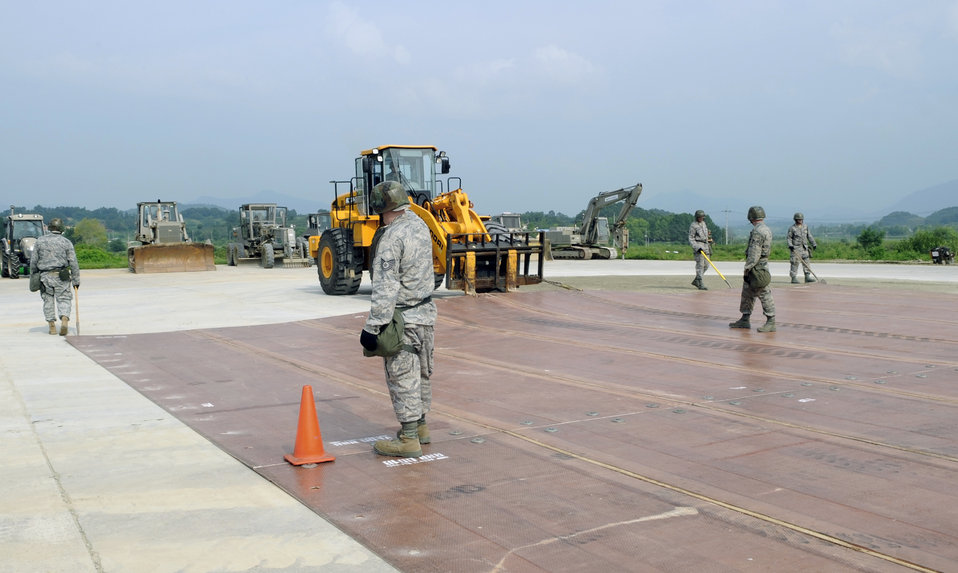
Osan AB's airfield damage repair team train with South Korean air force

Airmen from the 51st Civil Engineer Squadron stand on a folded fiberglass mat as it is moved into place by a 10,000-pound forklift on a simulated runway at Jungwon Air Base, Republic of Korea, Aug. 19. The 30-foot long, 54-foot wide mats are used to quickly repair runway damage, and can be connected to cover a large area. The mats are being moved as part of a joint combined rapid runway repair training exercise with Airmen from the South Korean air force's 19th Tactical Fighter Wing and 91st Air Civil Engineer Group. The 51st CES is assigned to Osan Air Base, South Korea.